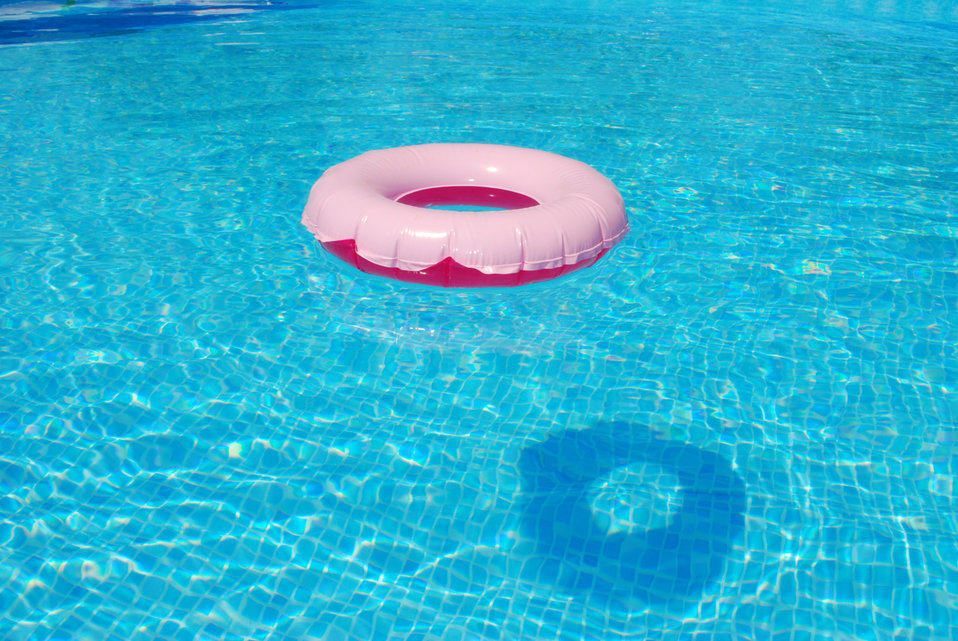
Shadow in pool bottom

Pink floatation device casting a shadow on the bottom of the blue pool..